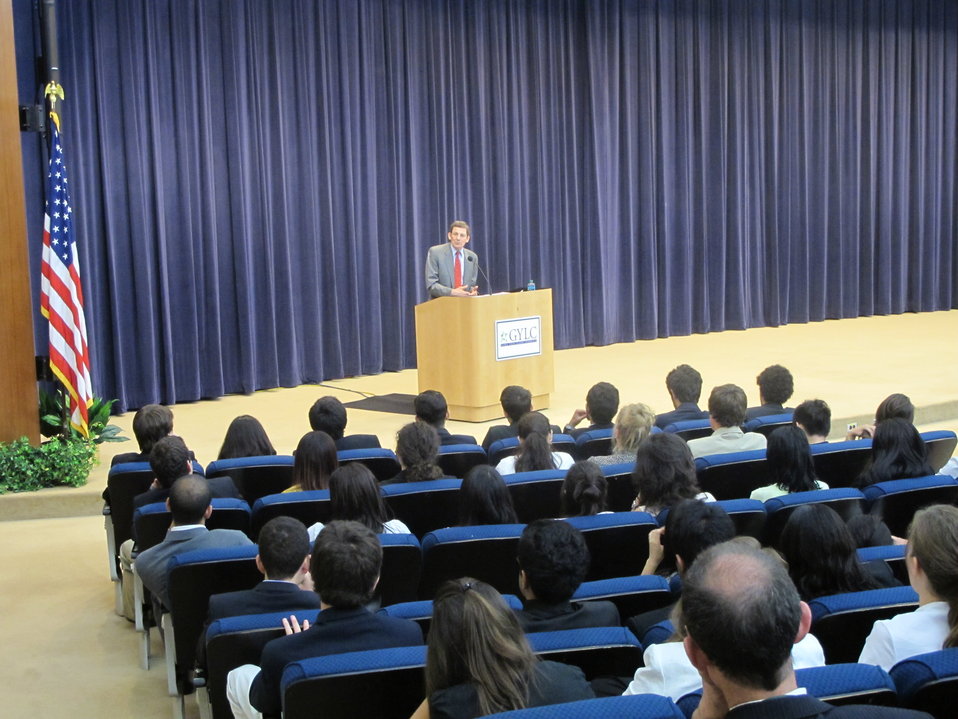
Special Representative Marc Grossman Addresses the Students of the Global Young Leaders Conference

Special Representative for Afghanistan and Pakistan Marc Grossman addresses the students of the Global Young Leaders Conference at the U.S. Department of State in Washington, D.C., on July 6, 2011.